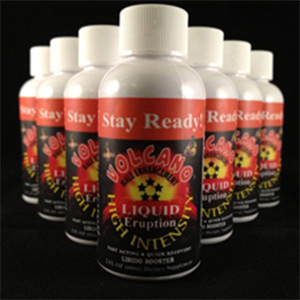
RECALLED - Marketed as a Dietary Supplement

July 18, 2013 – Product Recall – Volcano Company, Issues Voluntary Worldwide/Nationwide Recall of Volcano Male Enhancement Liquid and Volcano Male Enhancement Capsules, Marketed as a Dietary Supplement, Due to Undeclared Active Ingredients.